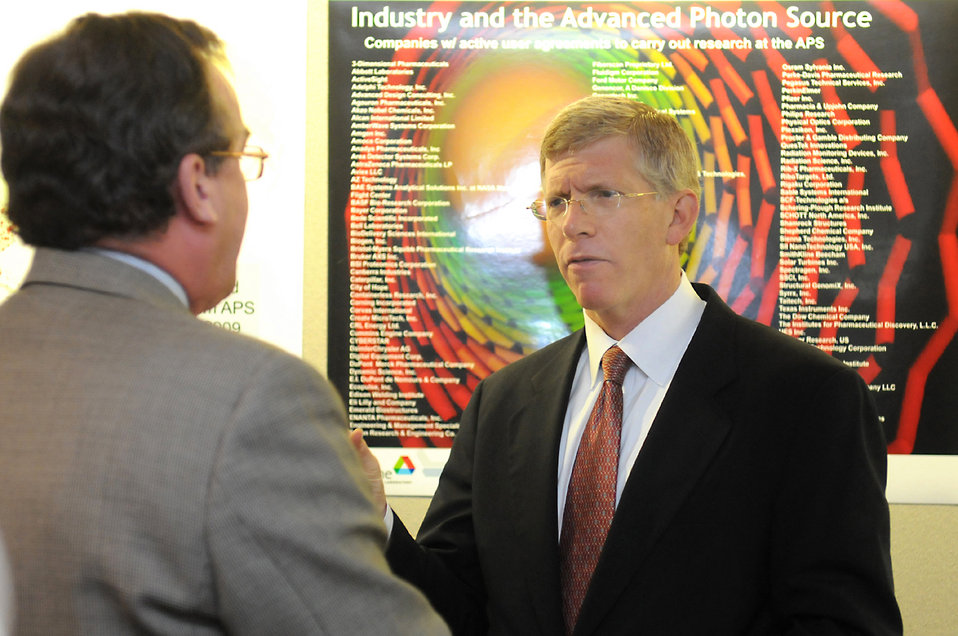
A visit to Argonne's Advanced Photon Source

Deputy Secretary of Energy Daniel Poneman speaks with J. Murray Gibson, Argonne National Laboratory